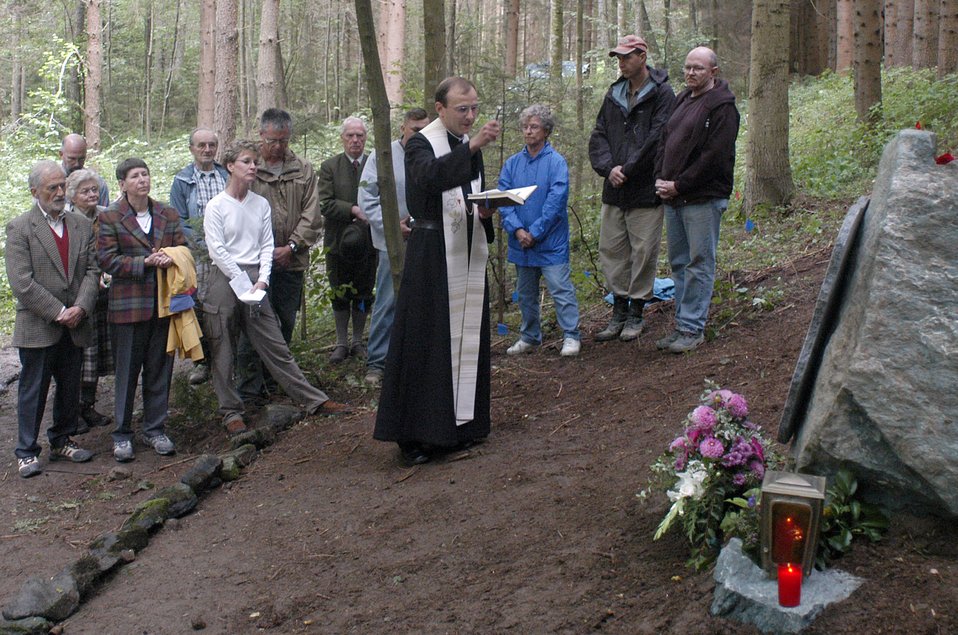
JPAC team returns from Austria

A priest from nearby Vostenhof, Austria, presides over an Aug. 27 memorial service for the members of a B-17 bomber that crashed in the area May 10, 1944. The service was attended by family, friends and members of the Joint POW/MIA Accounting Command. An 18-member JPAC team, including a forensic anthropologist, explosive ordnance disposal technician and field medic, from Hickam Air Force Base, Hawaii, returned Oct. 1 after 45 days in Austria attempting to recover the remains of 1st Lt. Stanley Dwyer and gunner Sgt. John Boros who were lost in the crash. The mission of JPAC is to achieve the fullest possible accounting of all Americans missing as a result of the nation's past conflicts.